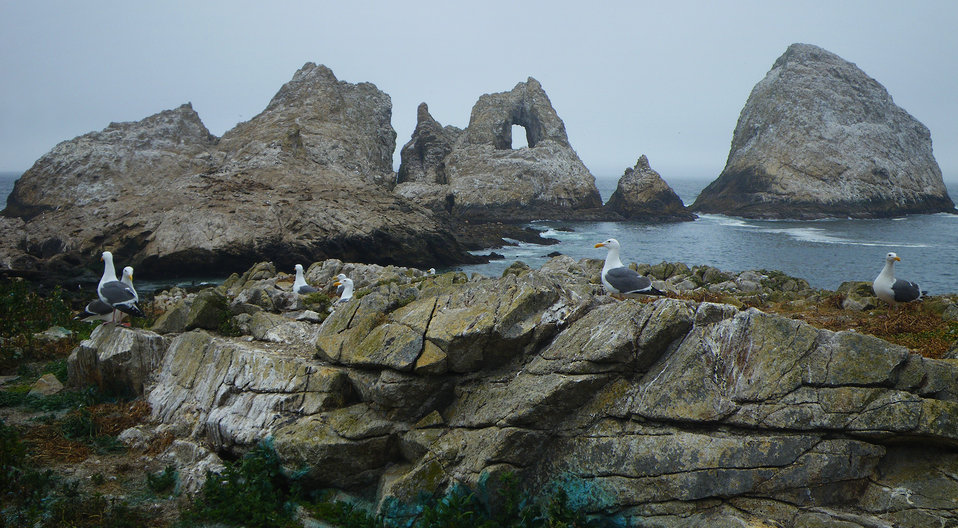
Aulone Island and Great Arch Rock

Aulone Island and smaller Great Arch Rock are immediately north of the northern tip of Southeast Farrallon Island, and together about 200 feet (61 m) by 350 feet (110 m) in size. They are barely separated by a narrow gorge.